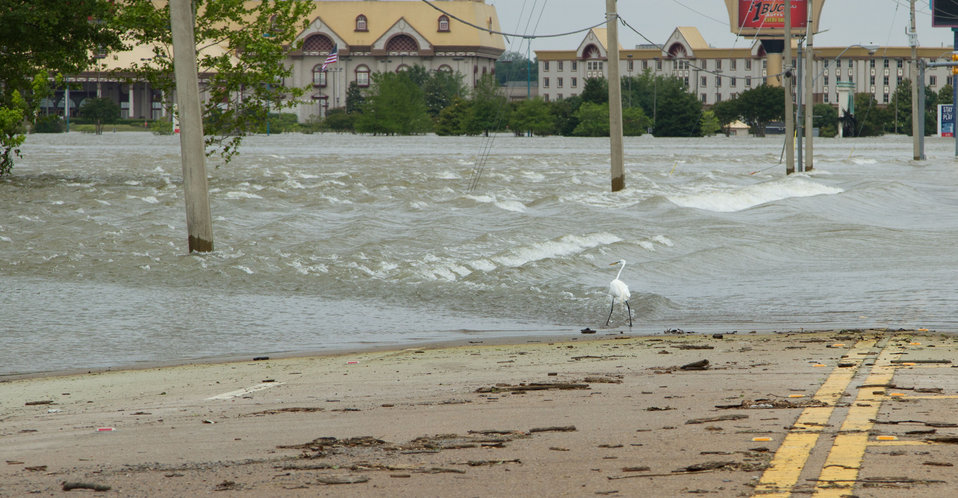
A bird picks up a fish from Mississippi River floods waters flowing over roadways and inundate casinos and the farms that surround them in Tunica, MS on Sunday, May 15. 2011.